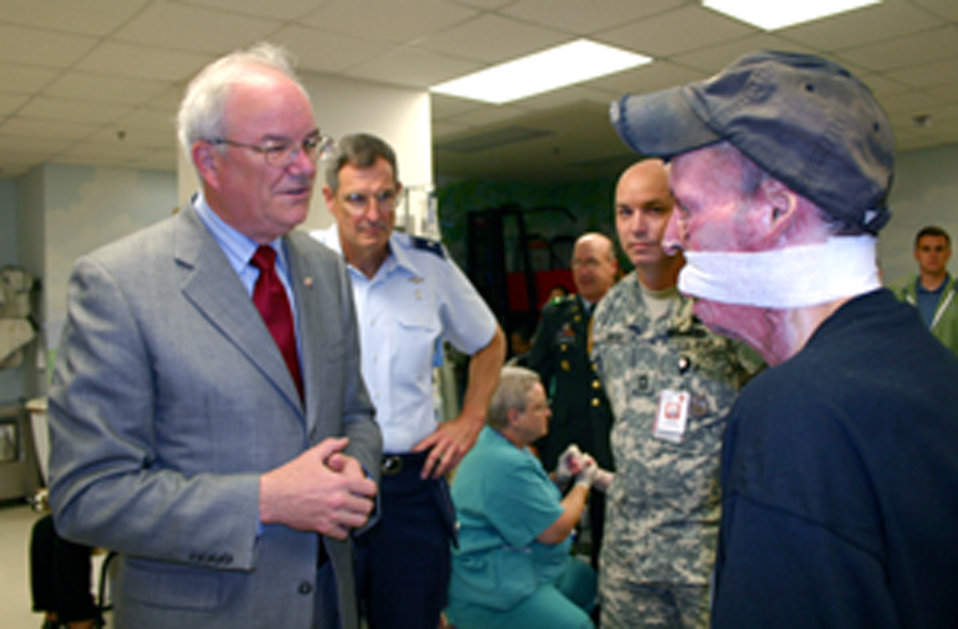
Secretary Wynne expects Airmen to continue to excel

(From left) Secretary of the Air Force Michael W. Wynne, Brig. Gen. (Dr.) David G. Young III and Army Master Sgt. Ben Martin visit with Staff Sgt. Israel Del Toro Jr. at Brooke Army Medical Center in San Antonio on Thursday, June 1, 2006. Sergeant Del Toro, a tactical air control party operator, was injured in combat in December 2004 while supporting Operation Enduring Freedom in Afghanistan. Secretary Wynne was in San Antonio visiting various military installations and training sites. General Young is commander of the 59th Medical Wing at Lackland Air Force Base and Sergeant Martin is assigned to BAMC.